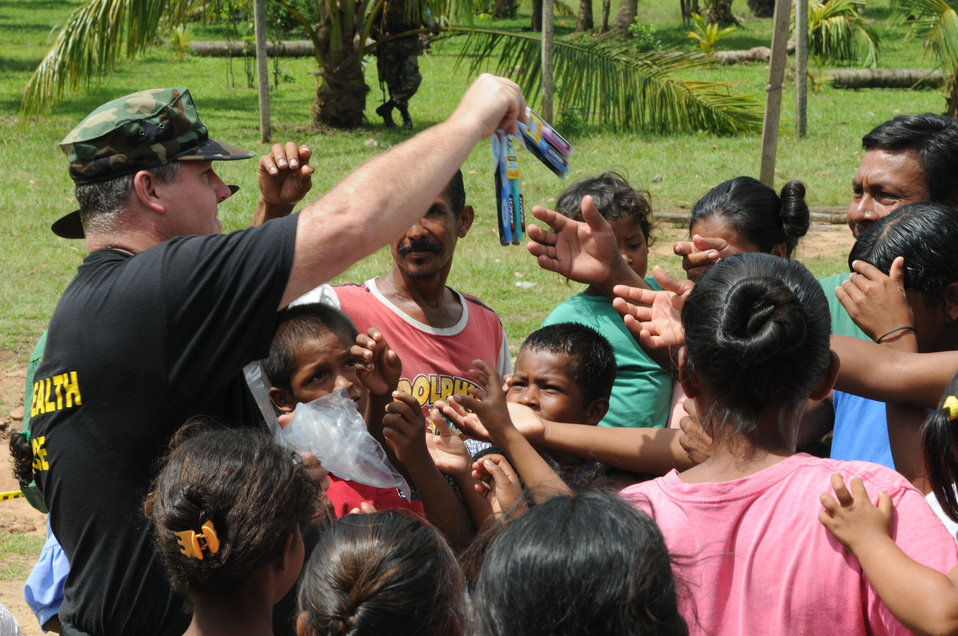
This image depicts U.S. Public Health Service (USPHS) Lt. Cmdr. Gary Brunette, distributing toothbrushes to a very receptive audience in Betania, Nicaragua during operation Continuing Promise (CP) 2008.